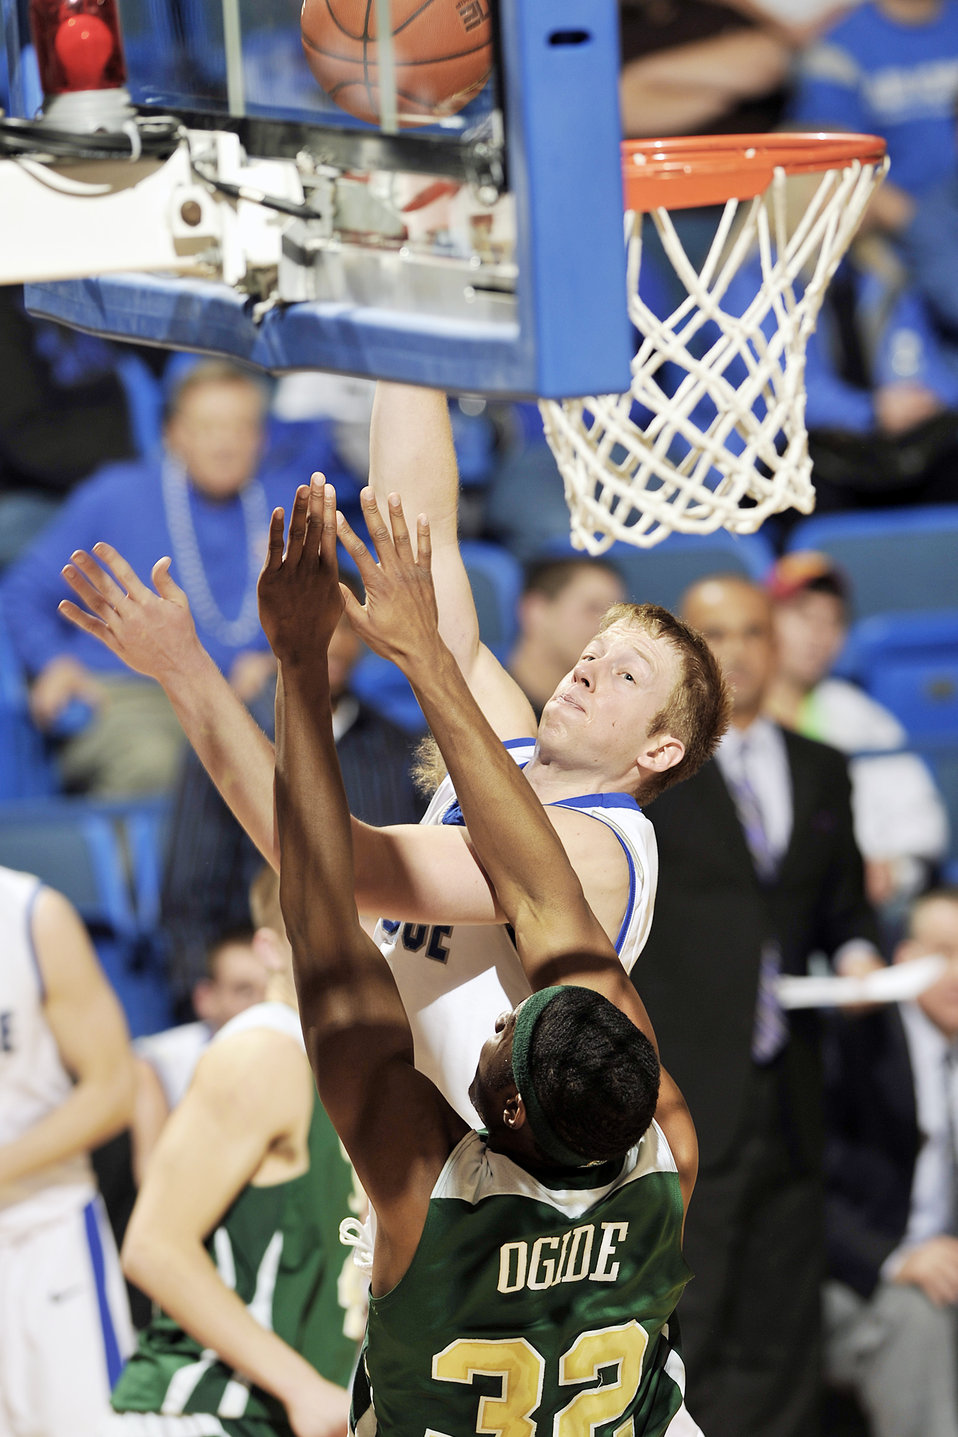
Colorado State beat Falcons

Air Force Academy senior Grant Parker goes up for 2 of his game-high 13 points as Colorado State beat Air Force 51-47at the U.S. Air Force Academy's Clune Arena Feb. 9, 2010. The Falcons are 9-14 overall and 1-9 in the Mountain West Conference.